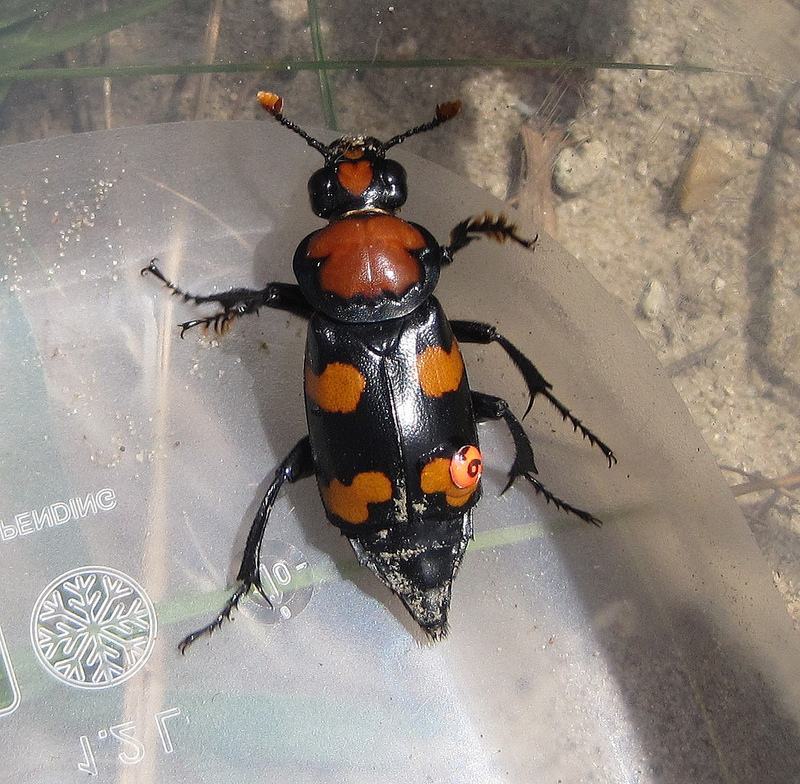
American Burying Beetle

Pictured here is an American Burying Beetle. This close up shot shows its unique colors and markings.

Location: Highway 61 near Merriman, Nebraska

Credit: Lindsay Vivian / USFWS

Photo Contest Entry #38